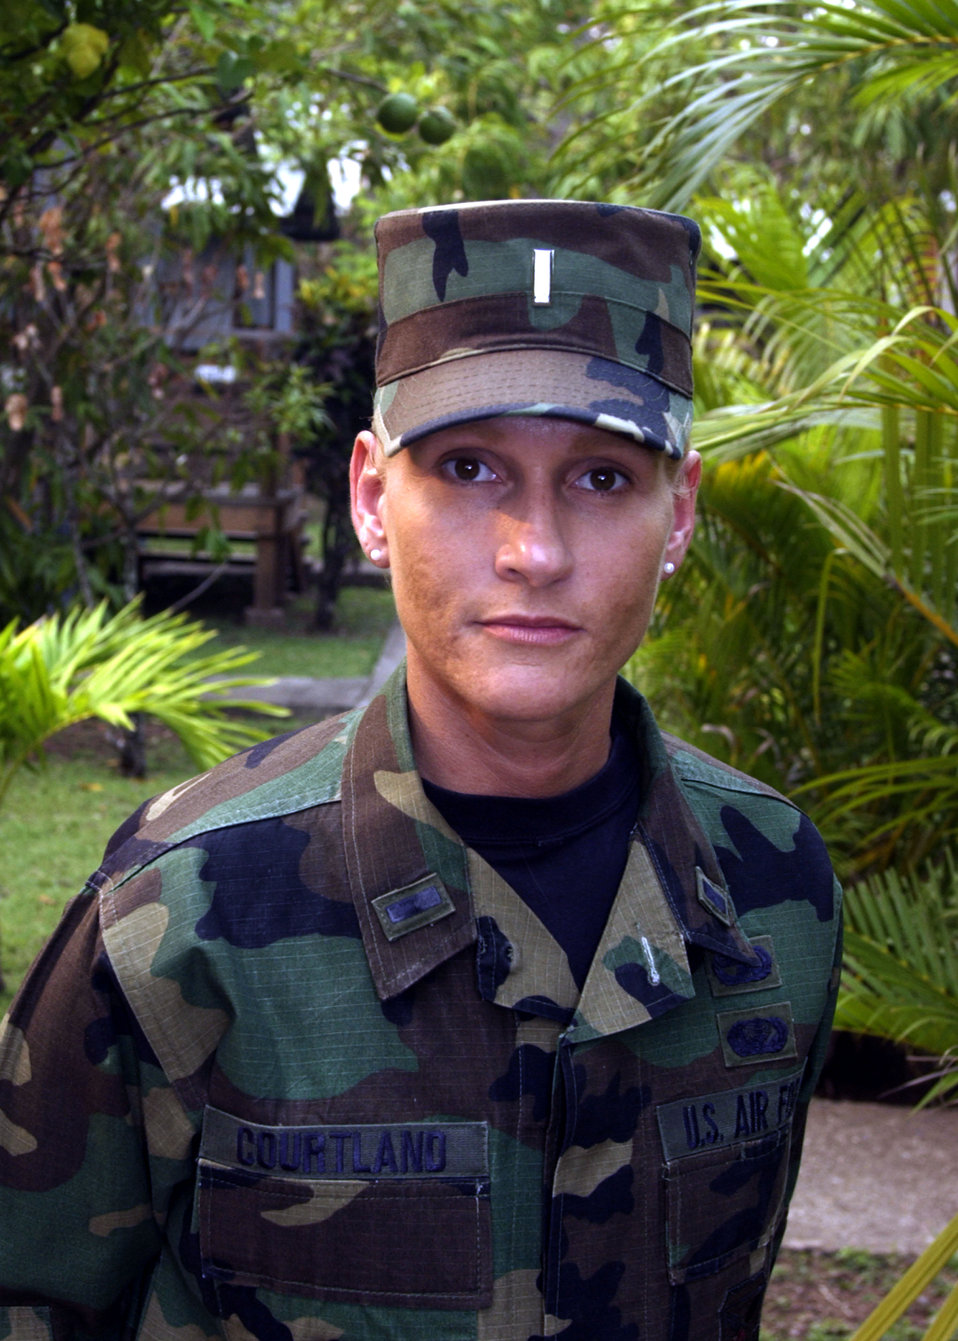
Lieutenant leaves 'footprint' at Soto Cano

SOTO CANO AIR BASE, Honduras -- First Lt. Kellie Courtland set a goal of running 1,500 miles during her one-year tour. In the process, she started a running group,